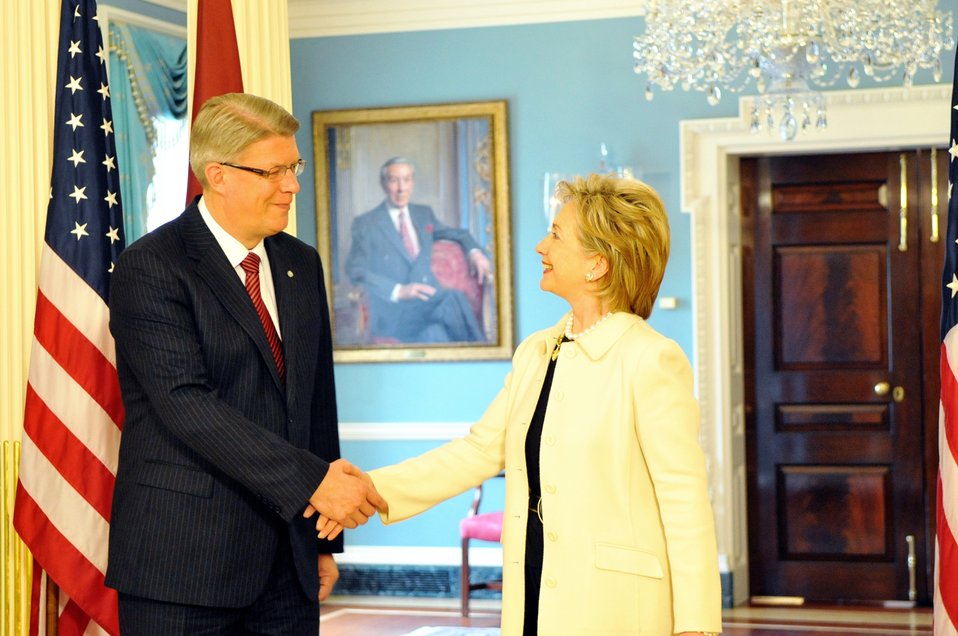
Secretary Clinton Meets With Latvian President

U.S. Secretary of State Hillary Rodham Clinton hosts a bilateral meeting with Latvian President Valdis Zatlers in the Treaty Room of the U.S. Department of State in Washington, DC May 14, 2009.